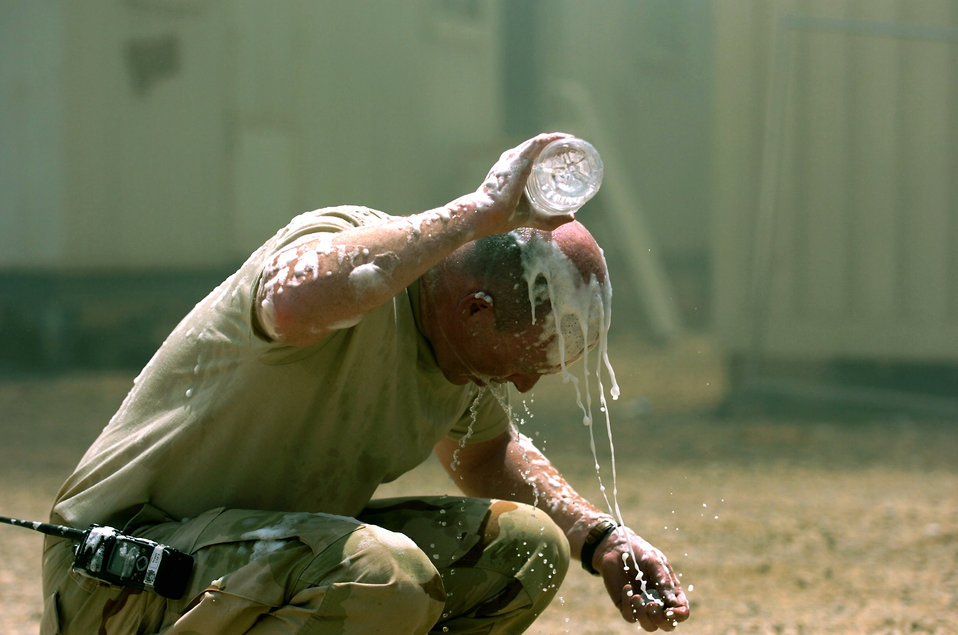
AF, Army firefighters

Master Sgt. David Clifford washes off firefighting foam after battling a two-alarm fire July 22 at Joint Base Balad, Iraq. The foam helped extinguish a fire that destroyed several metal framed buildings used as living quarters and supply storage units. Sergeant Clifford, the Joint Base Balad Fire Department assistant fire chief, is deployed from Tyndall Air Force Base, Fla.